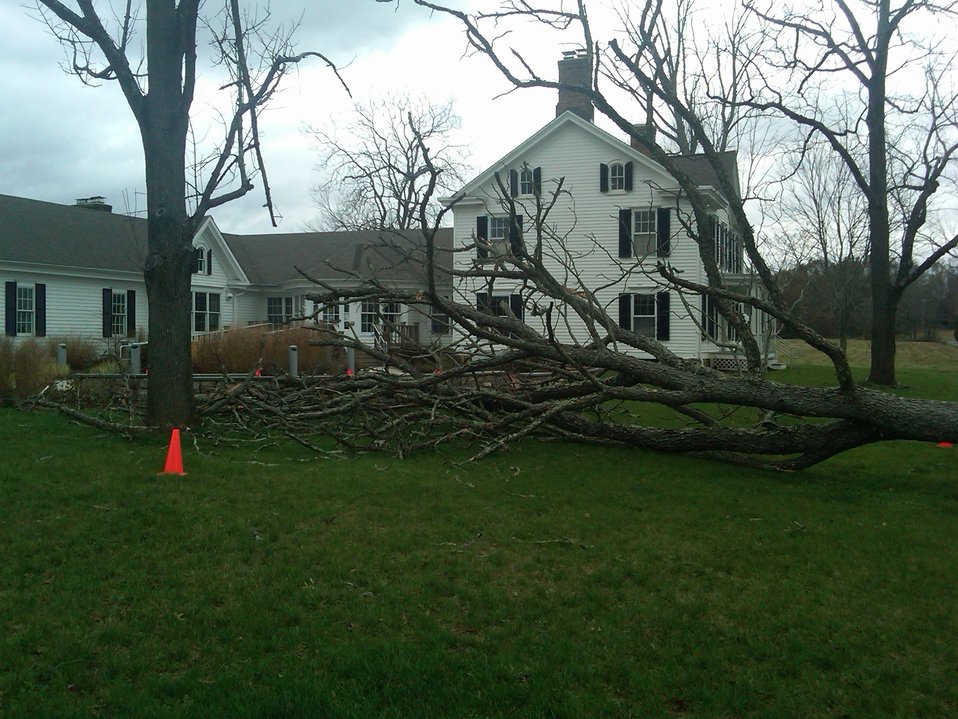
Great Swamp National Wildlife Refuge visitor center (NJ)

A tree nearly misses the Helen C. Fenske Visitor Center at Great Swamp National Wildlife Refuge after Hurricane Sandy.